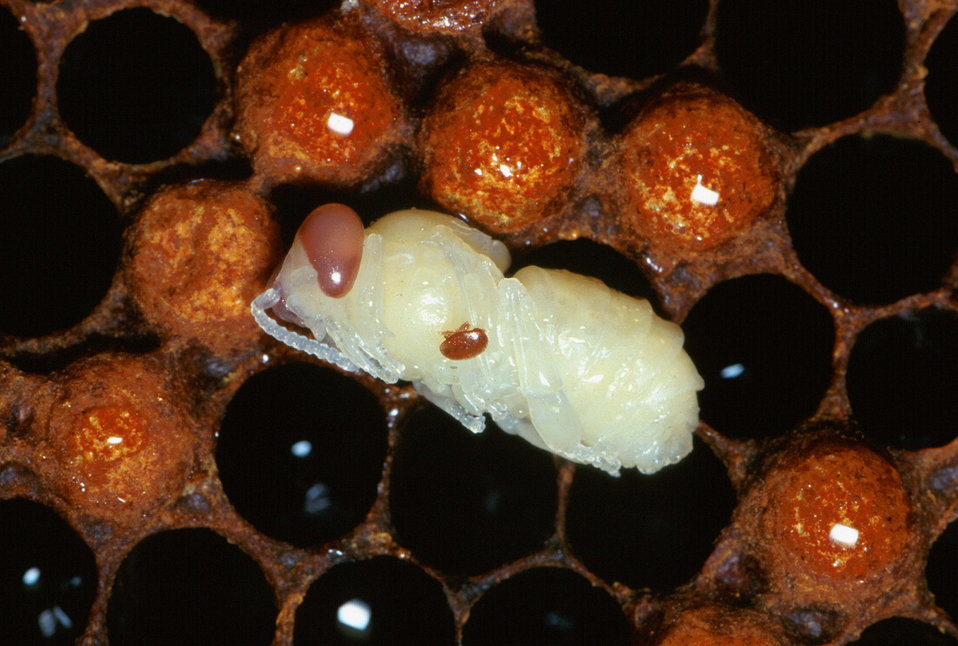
Visible as a dark, oval shape, an adult female varroa mite feeds on the midsection of a developing worker bee.